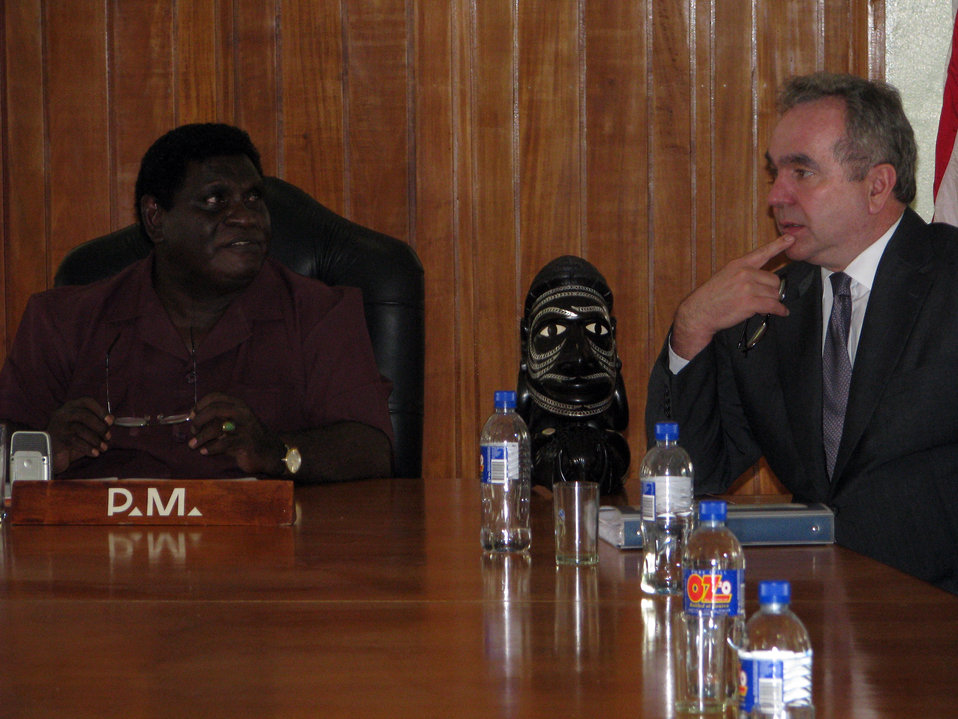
Assistant Secretary Campbell Meets With Solomon Islands Prime Minister Philip

Assistant Secretary of State for East Asian and Pacific Affairs Kurt Campbell, right, meets with Solomon Islands Prime Minister Danny Philip during his visit to Honiara, Solomon Islands, on June 29, 2011. Assistant Secretary Campbell is leading a U.S. delegation on a trip throughout the South Pacific to engage in discussions to enhance bilateral political, economic and security relations in the region. The delegation he is leading includes: Adm. Patrick Walsh, commander of U.S. Pacific Fleet; Office of the Secretary of Defense South/Southeast Asia Principal Director, Marine Corps Brig. Gen. Richard Simcock; and U.S. Agency for International Development (USAID) Assistant Administrator Nisha Biswal.